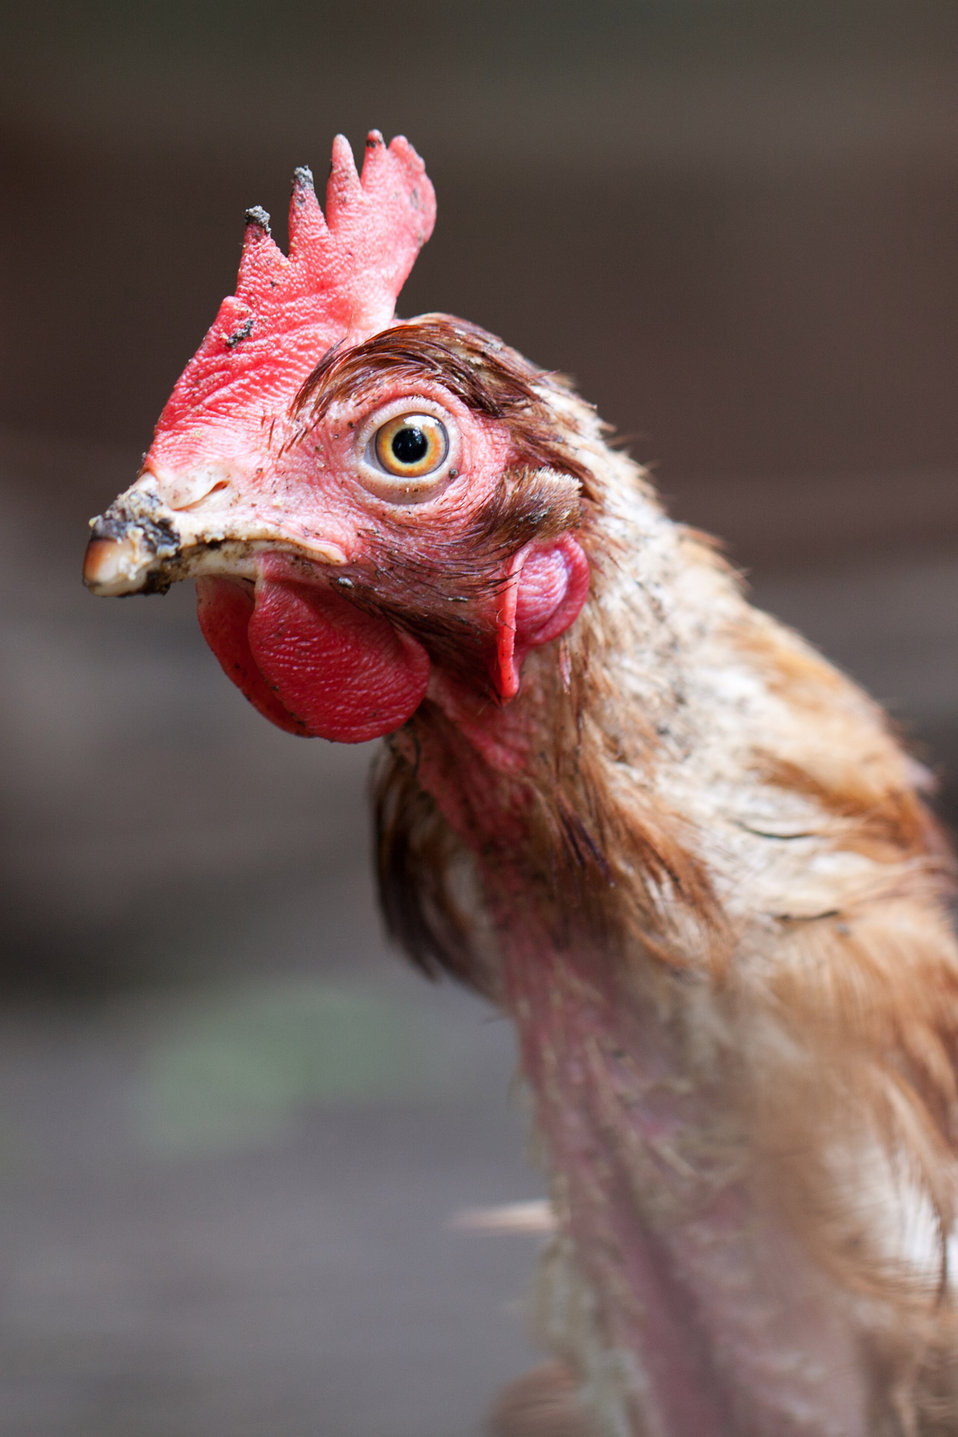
Curious hen

Portrait of a curious hen.